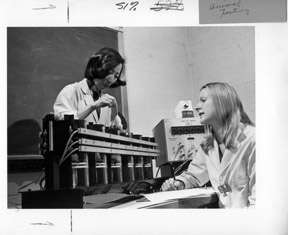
The automated optical activity meter is used to test the effects of drugs
being developed in connection with the treatment of Parkinson and allied
behavioral and motor disorders at Brookhaven National Laboratory.